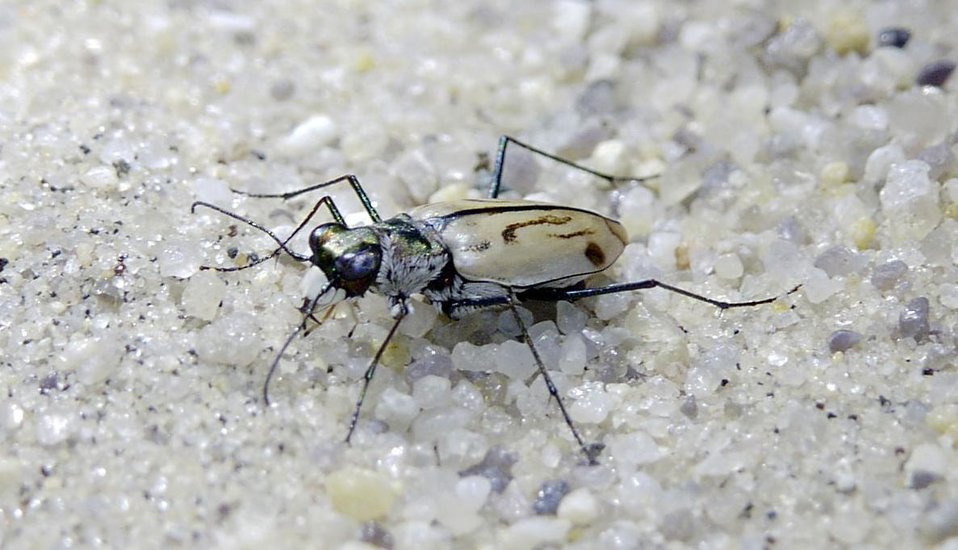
Northeastern beach tiger beetle

The federally listed threatened northeastern beach tiger beetle depends on the remaining sandy beaches of the Chesapeake Bay. While it historically lived on sandy beaches from Massachusetts to Virginia, the majority of its remaining home is within the bay.